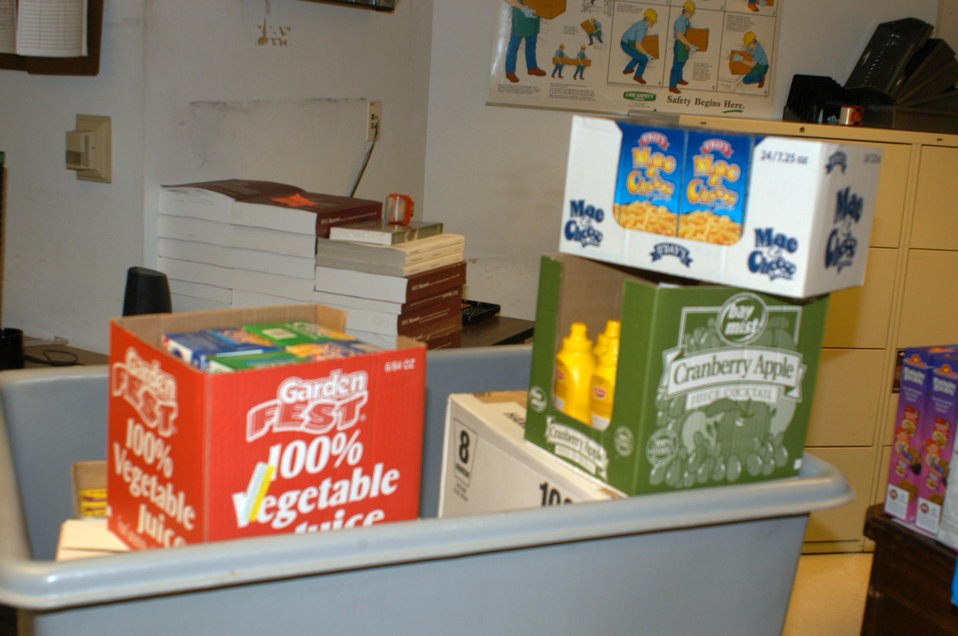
Sierra Exif JPEG